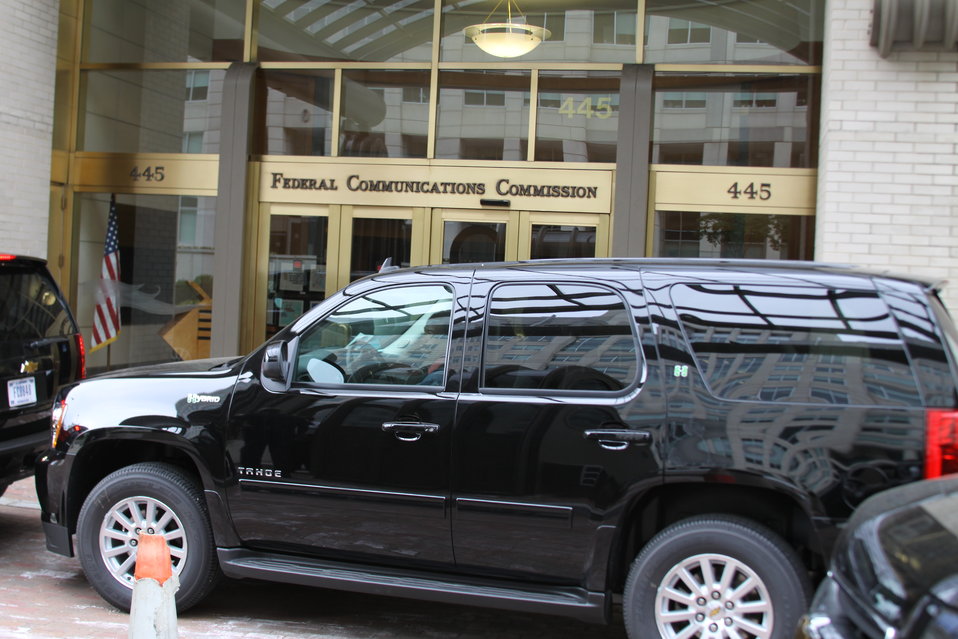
Tahoes 005